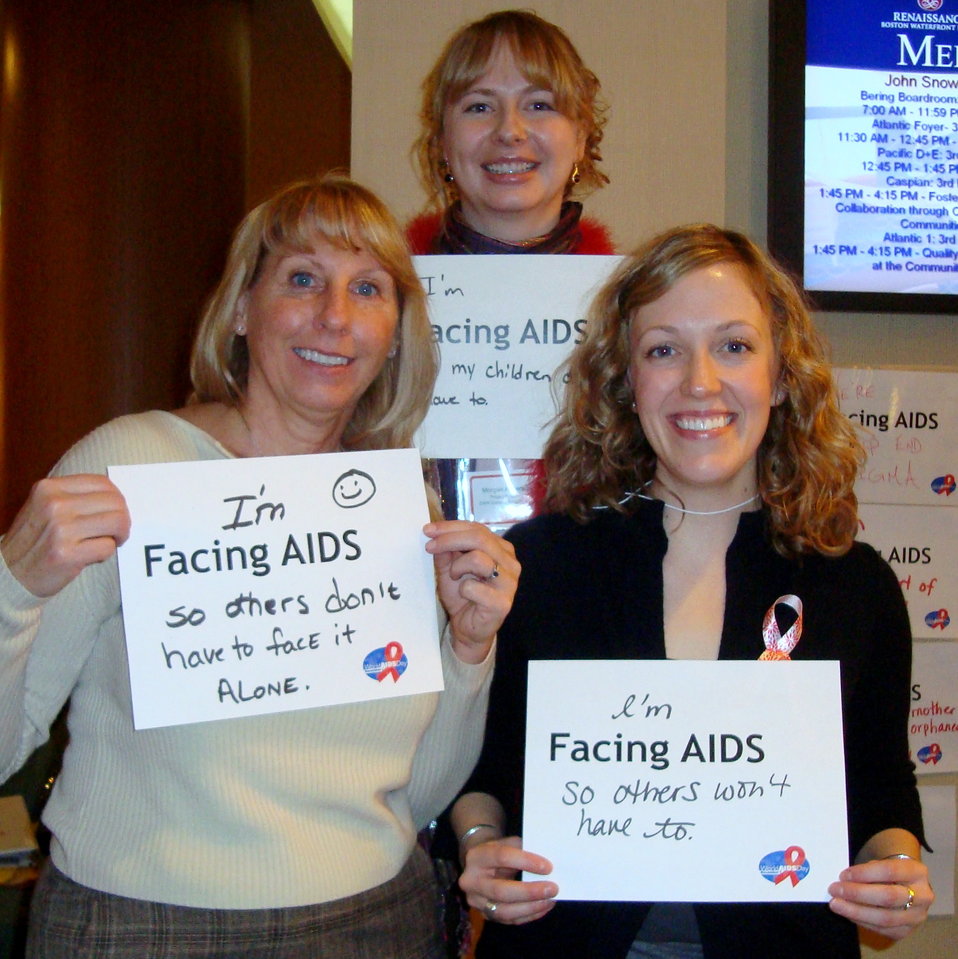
FacingAIDSCampaign 045